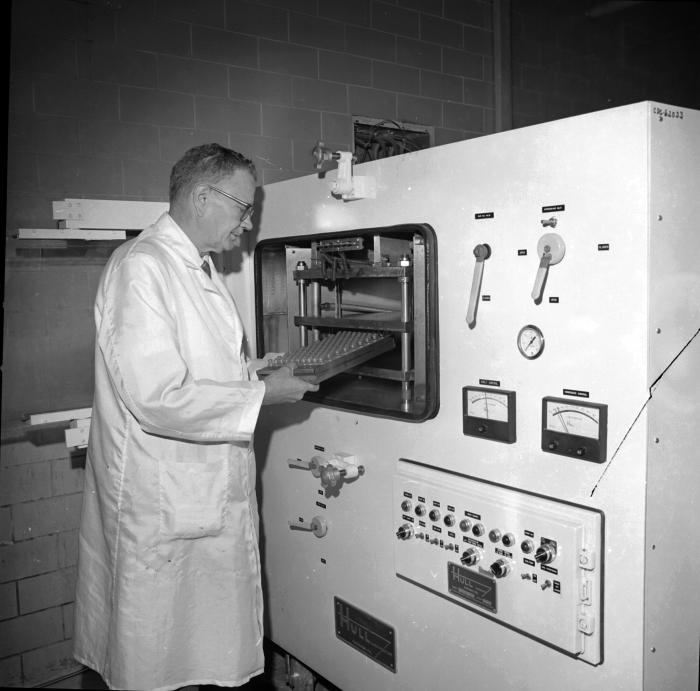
This historic 1967 photograph depicted laboratory technician, Bonnie Smith, as he was loading a Hull lyophilizer. Lyophilization, otherwise known as freeze-drying, prolongs the lifespan of perishable materials, so that they may be shipped, and stored for a much longer time, often without the need for refrigeration.